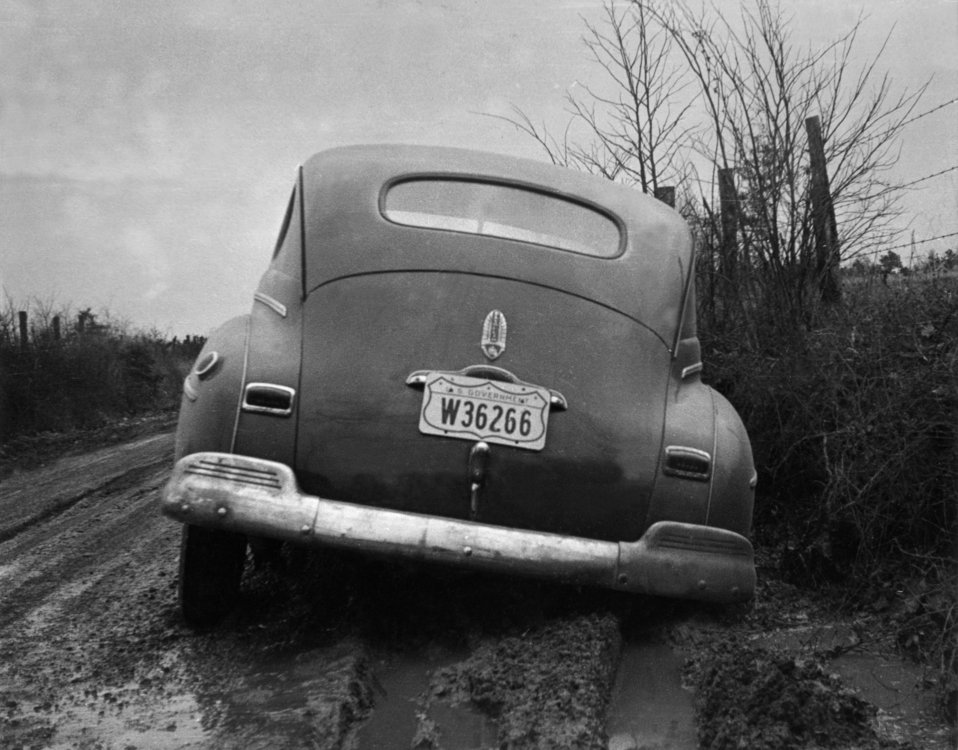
Early Road Conditions in Oak Ridge

8-30 DOE Photo by Ed Westcott 3-2-1942 Oak Ridge Tennessee